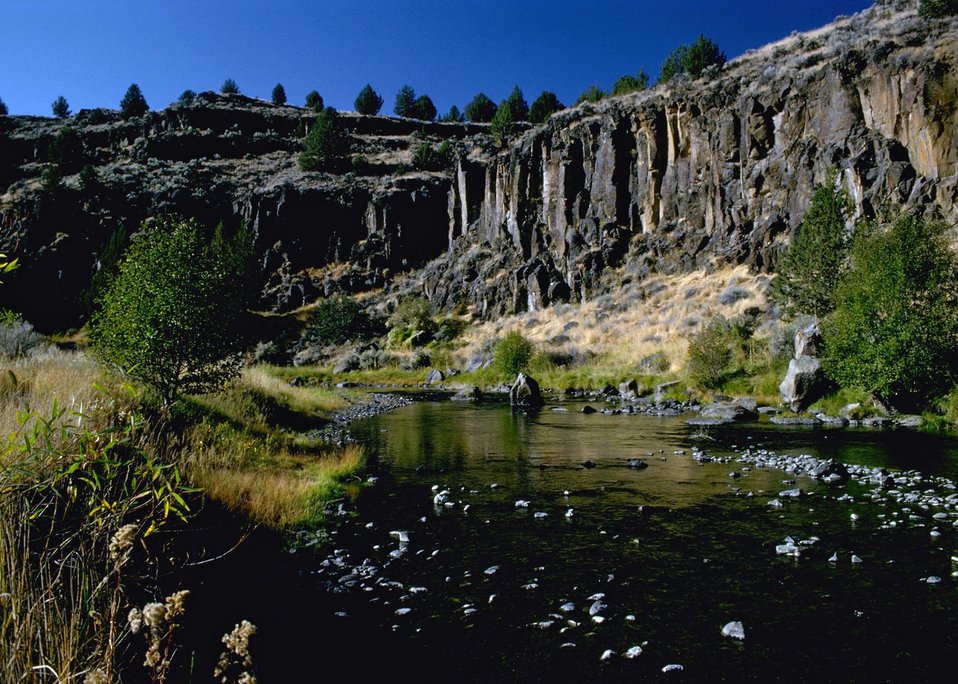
Donner and Blitzen National Wild & Scenic River above Page Springs campground in Southeast Oregon.